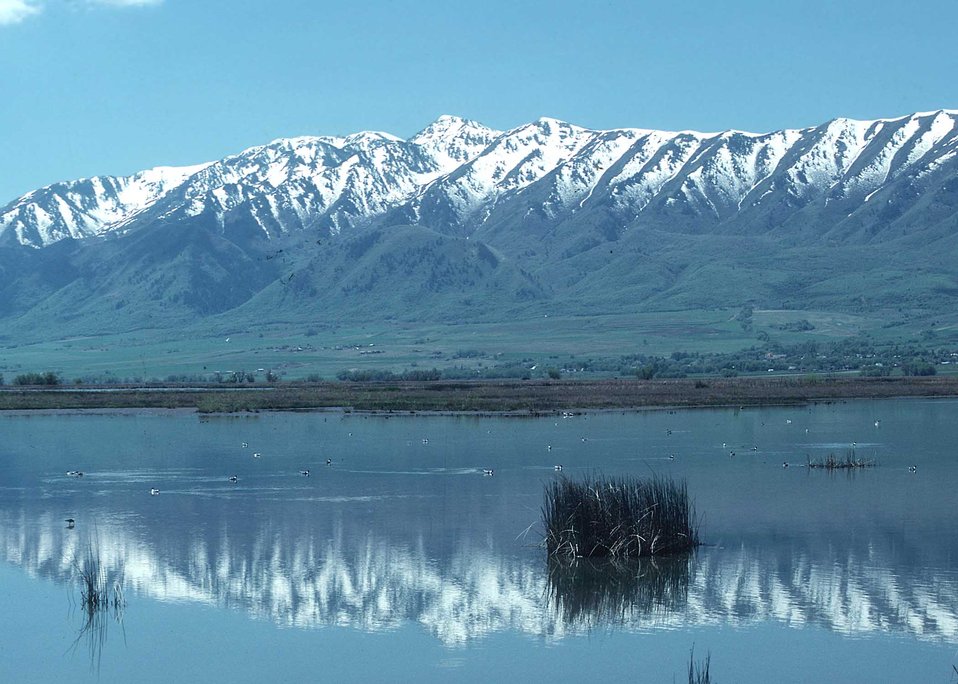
Wetlands provide a haven for migrating ducks, geese and other water fowl in Cache County, Utah.